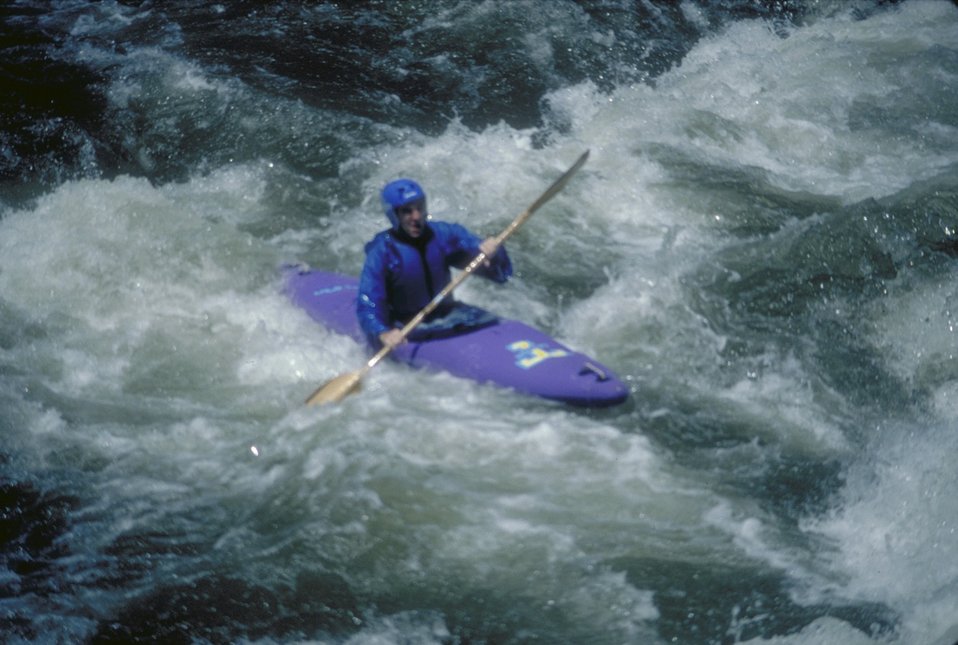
Kayaking the rapids on the Arkansas River.